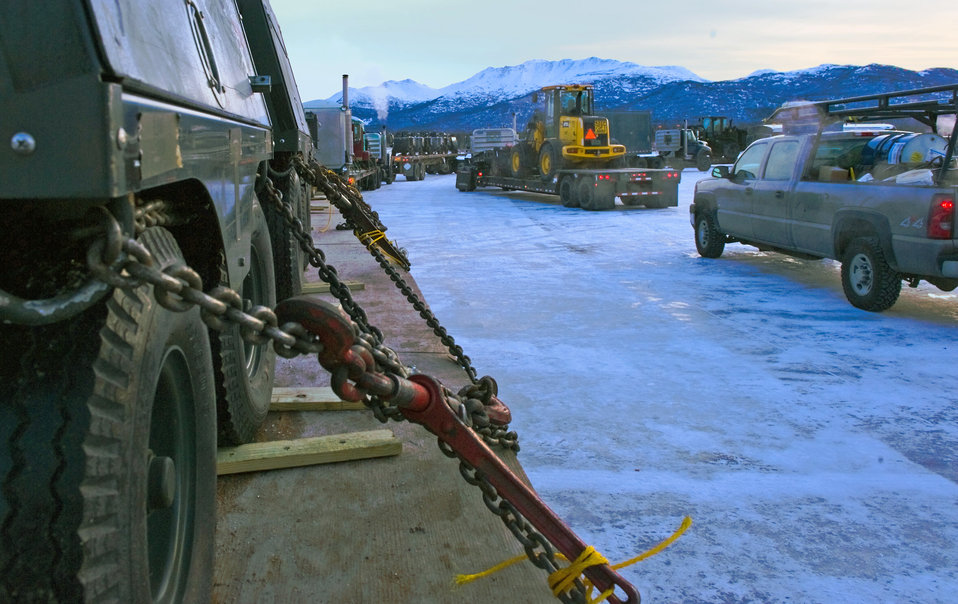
Alaska joint force officials continue search for F-22 Raptor pilot

Members of the Army, Air Force, Alaska National Guard along with several other state assets, delivered materials Nov. 18, 2010, at Joint Base Elmendorf-Richardson, Alaska. The effort was in support of the rescue mission for a JB Elmendorf F-22 Raptor pilot. The crash site is approximately 100 miles north of Anchorage.